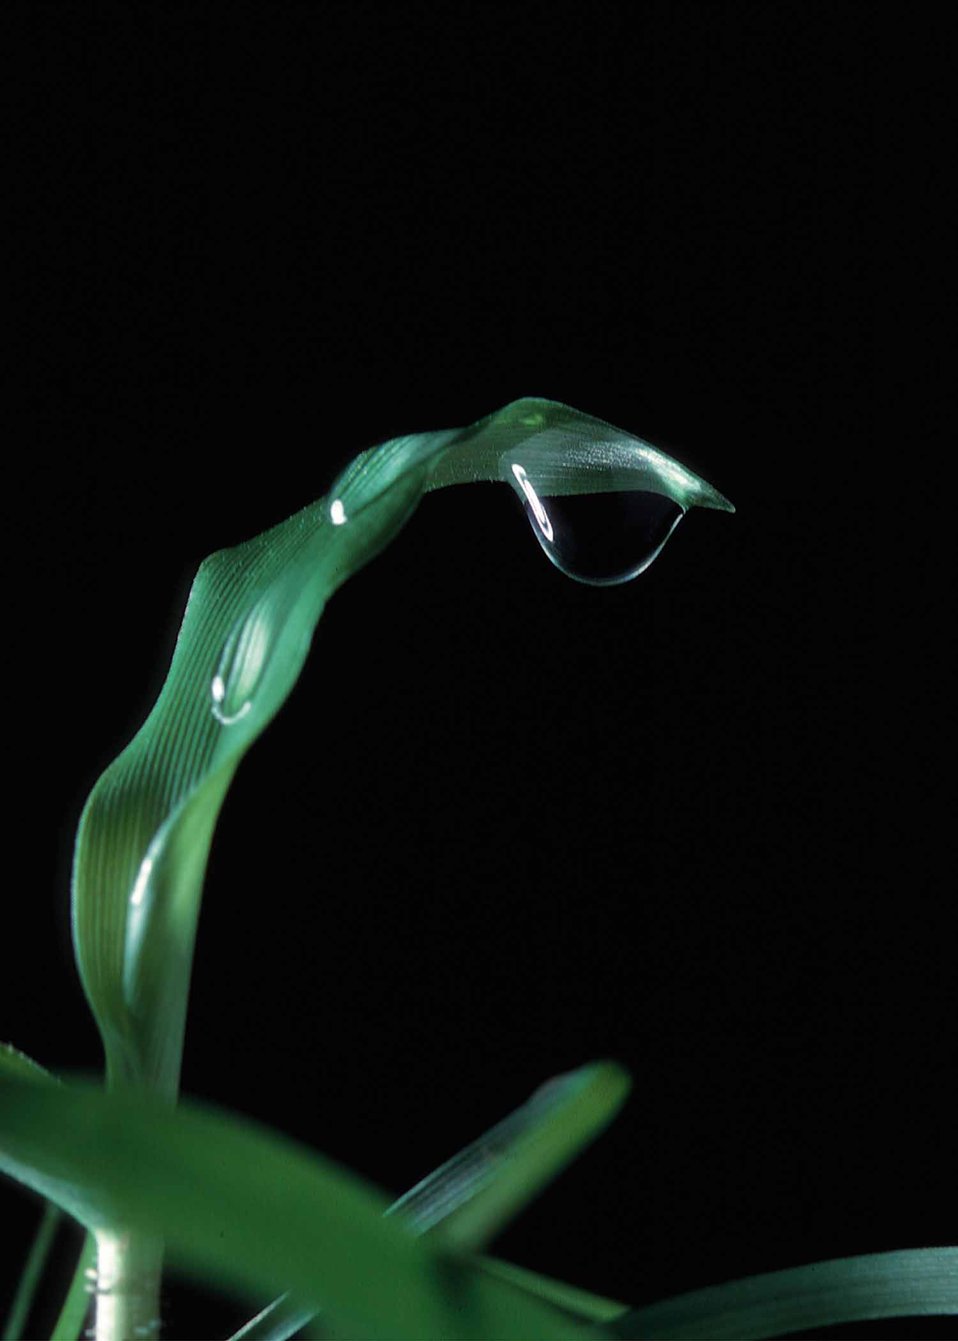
Water drop on corn plant.